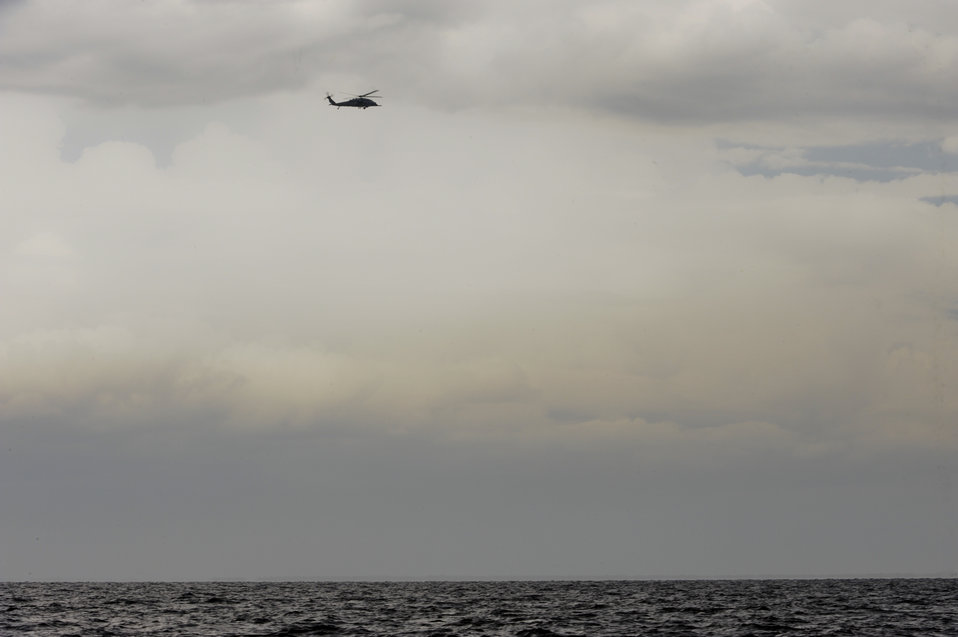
Water rescue

Airmen aboard an HH-60 Pave Hawk from the 41st Rescue Squadron at Moody Air Force Base, Ga., search the Gulf of Mexico for downed personnel during a water rescue exercise on Aug. 14, 2012. Airmen from the 41st RQS and 38th RQS worked to locate and rescue downed personnel.